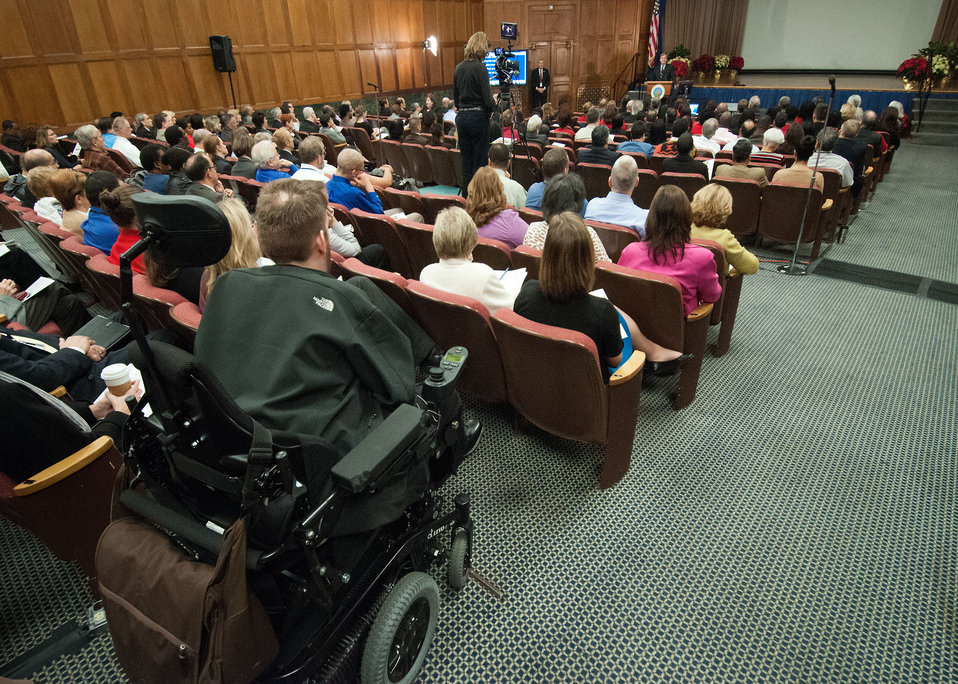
Agriculture Secretary Tom Vilsack addresses employees at the U.S. Department of Agriculture’s (USDA) Fourth Annual Cultural Transformation event held in Washington, D.C. on Tuesday, Dec. 4, 2012. The theme for the event “Faces of Cultural Transformation” Focusing on changing the way we serve our customers and cultural transformation’s benefits to employees. Secretary Vilsack spoke of the progress made during his administration’s tenure at the department and how USDA is cited as a positive example of cultural transformation in the workplace.